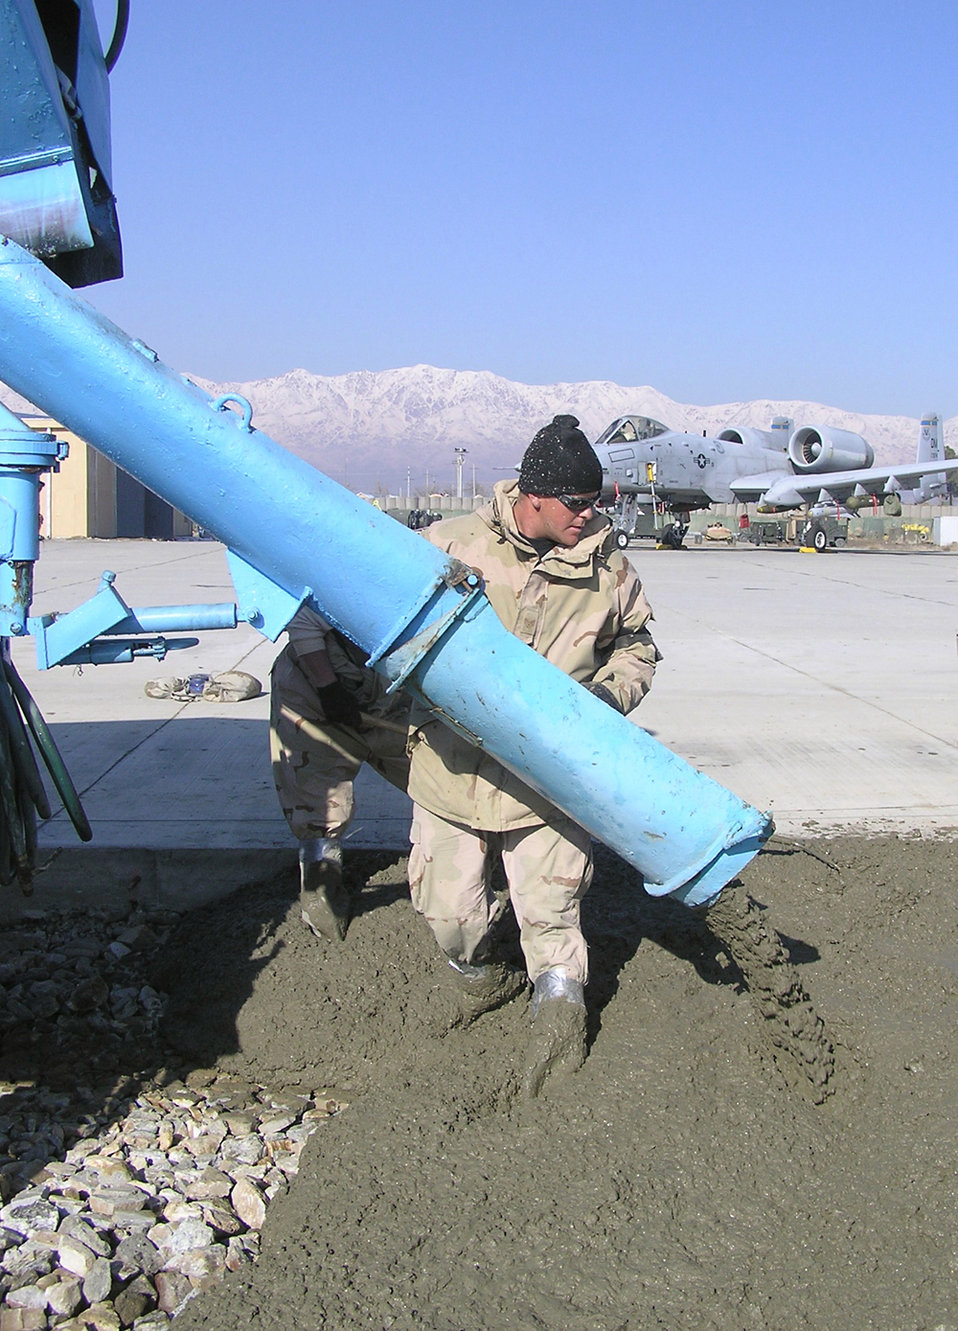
Expanding ramp

BAGRAM AIR BASE, Afghanistan -- Staff Sgt. Wes Jones pours concrete to expand and improve the combat aircraft ramp here. Sergeant Jones is a pavements and equipment journeyman with the 455th Expeditionary Civil Engineer Squadron. He is deployed from Travis Air Force Base, Calif., and supporting Operation Enduring Freedom.